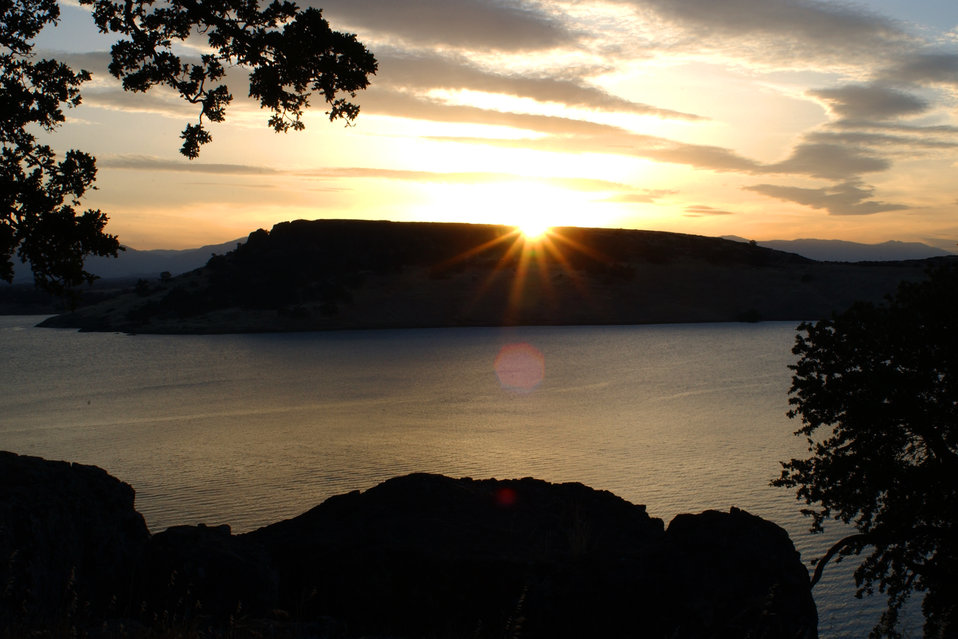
Black Butte Lake

The sun sets over the rocky hills at Black Butte Lake near Orland, Calif., shown May 26, 2002. The lake was formed from the impoundment of Stony Creek in 1963, when the U.S. Army Corps of Engineers Sacramento District completed construction of Black Butte Dam. When full, the lake has a surface area of 4,460 acres, is seven miles long and boasts a shoreline of 40 miles. The dam reduces flood risk for nearby towns and agricultural lands. Black Butte Lake and Dam are managed by the Sacramento District.